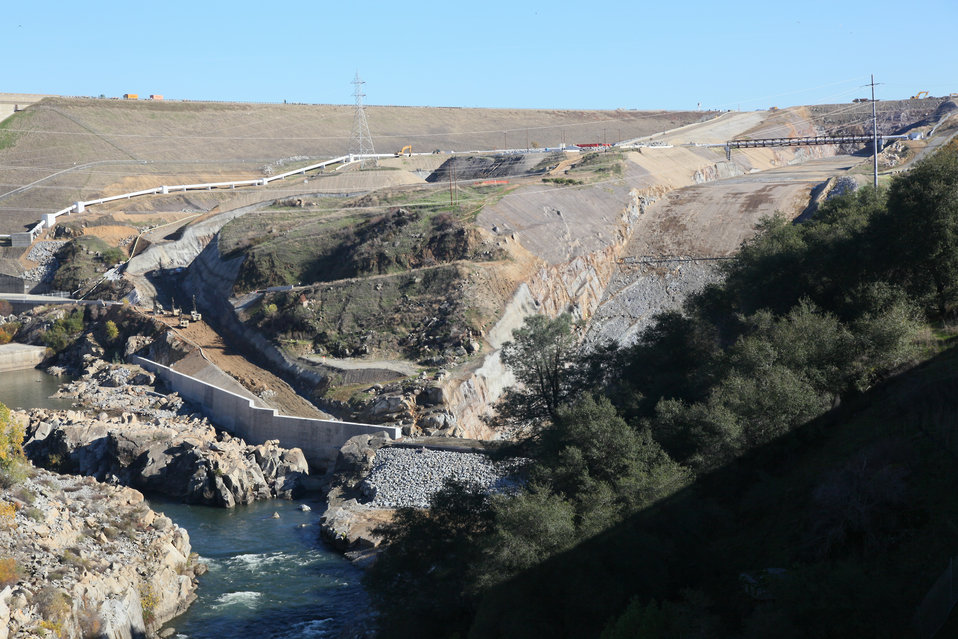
Folsom Dam Spillway construction

FOLSOM, Calif. (Dec.14, 2010) – Construction continues on an auxiliary spillway for Folsom Dam here Dec. 7. The spillway will allow for more manageable water releases from Folsom Lake to the lower American River, substantially reducing the risk of catastrophic flooding in the Sacramento metropolitan area.